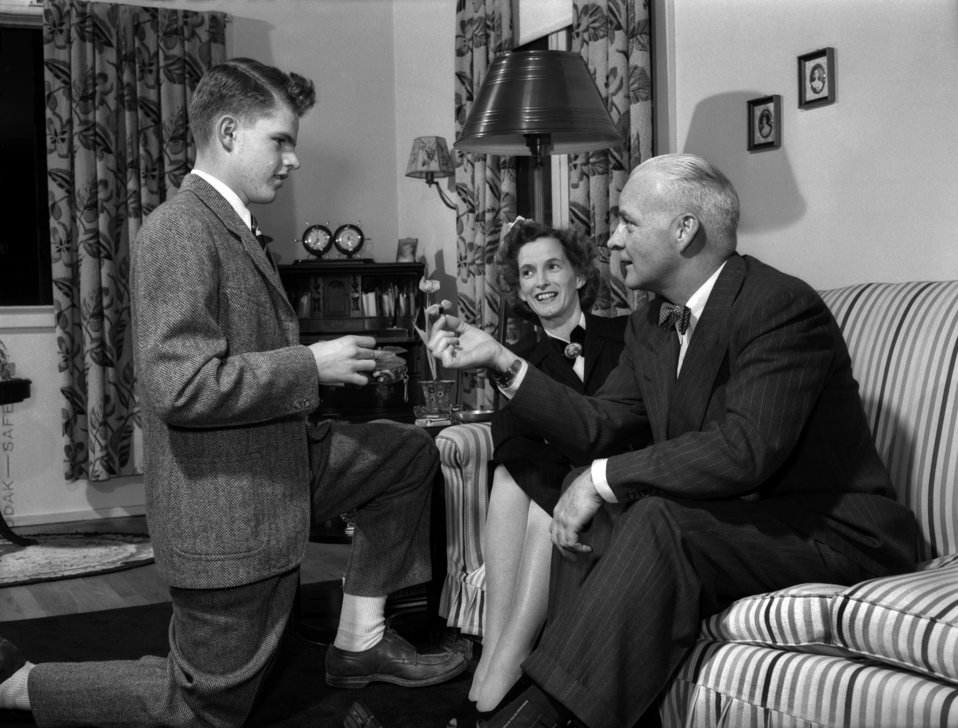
L.Z. Polen Family Oak Ridge

3330-30 DOE photo Ed Westcott 3-5-1947 Oak Ridge Tennessee